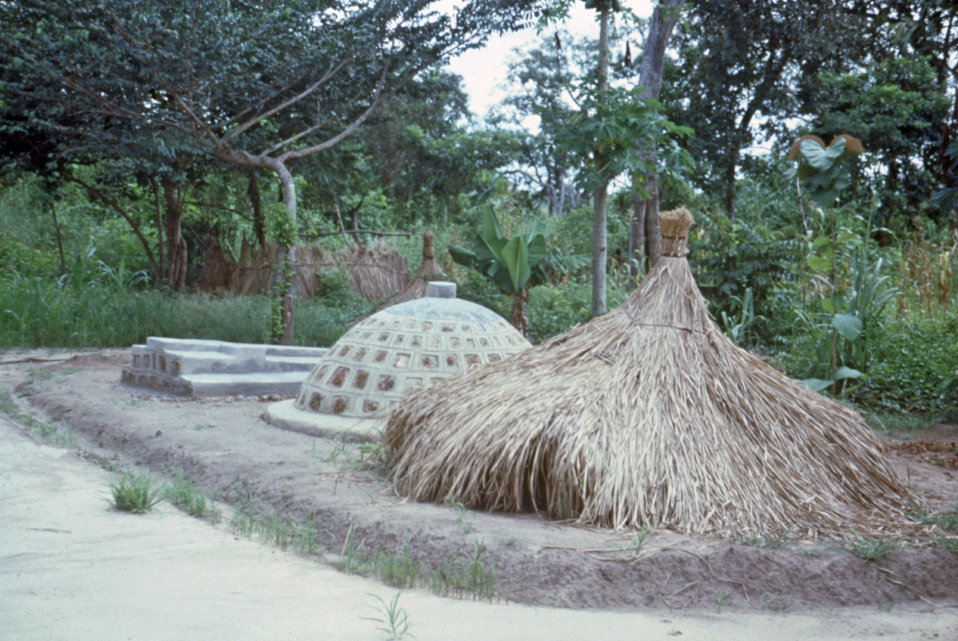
This photograph, taken by CDC's EIS officer Dr. Roy Baron, showed a graveyard in Sudan where the first cases were laid to rest during the country's 1976 Ebola outbreak.